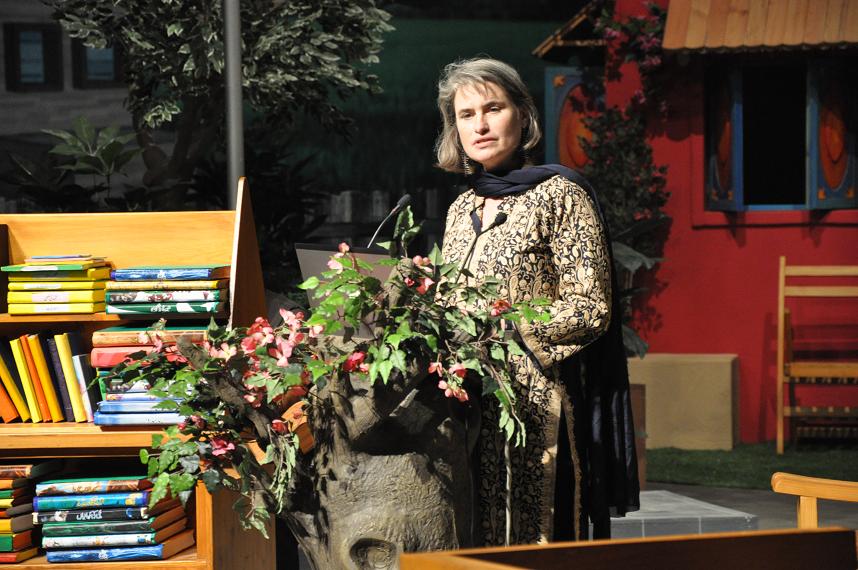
Charlotte Cole - Sesame Workshop US